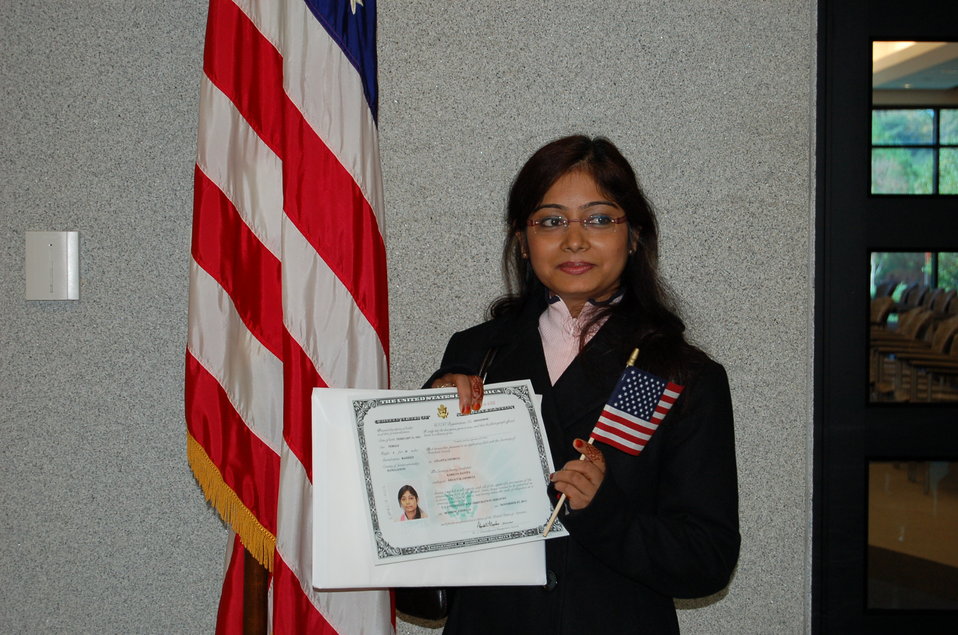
New Citizens